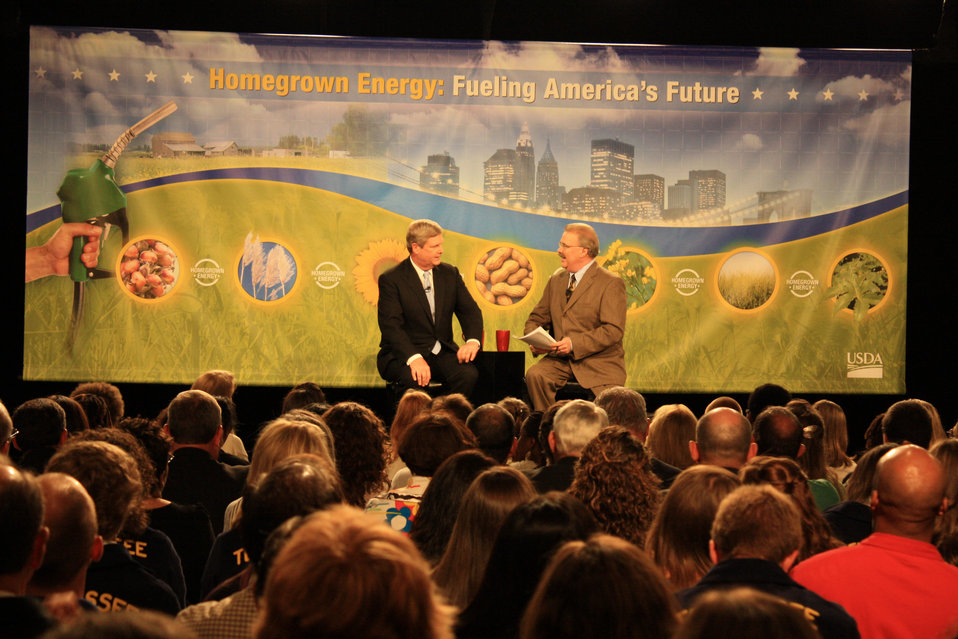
Agriculture Secretary Tom Vilsack appears on RFD TV in Nashville, TN, with RFD News Director Mark Oppold, on Monday, May 23, 2011.